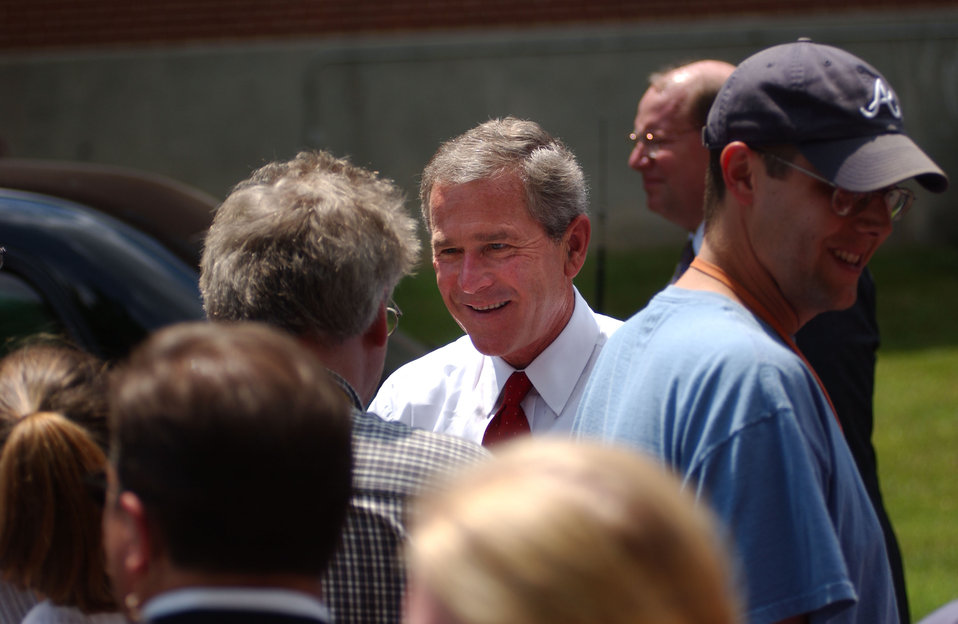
President George W. Bush visit to Oak Ridge

04-164-0398 DOE photo by Lynn Freeny

President George W. Bush visit to Oak Ridge National Lab 7-12-2004